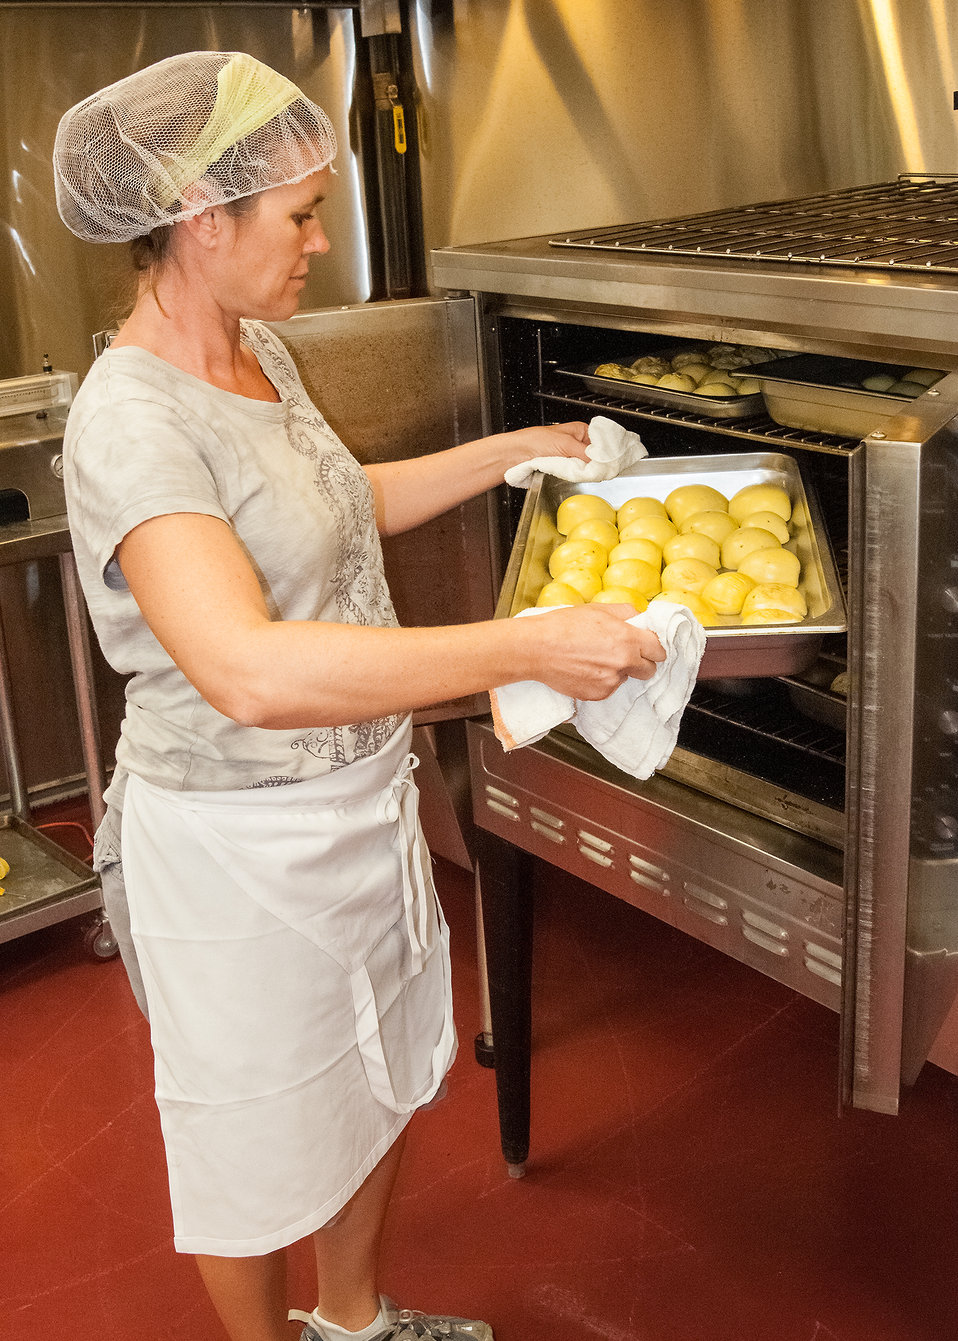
Allyson Spanier removes baked apples from an oven for her Baked Apple and Squash baby food at the Vermont Food Venture Center in Hardwick, VT. Spanier explains why she started Vermont Baby: “I wanted to provide parents with some unique, healthy, tasty options that they would feel good about feeding to their babies.” Her goals have ben met. The baby food that she makes is purely Vermont with organic ingredients from local farmers.
The Vermont Food Venture Center, a non-profit multi-purpose incubator kitchen and food processing facility operated by the Center for an Agricultural Economy in Hardwick, VT received assistance through a U.S. Department of Agriculture (USDA) Rural Development (RD) Rural Business Enterprise Grant (RBEG). The grant offers farmers in a region of rural America that celebrates food, farm and local economy the tools necessary to convert crops to value added business to start or expand their food-based business with the potential to create jobs and increase economic opportunity on Sep. 19, 2013.